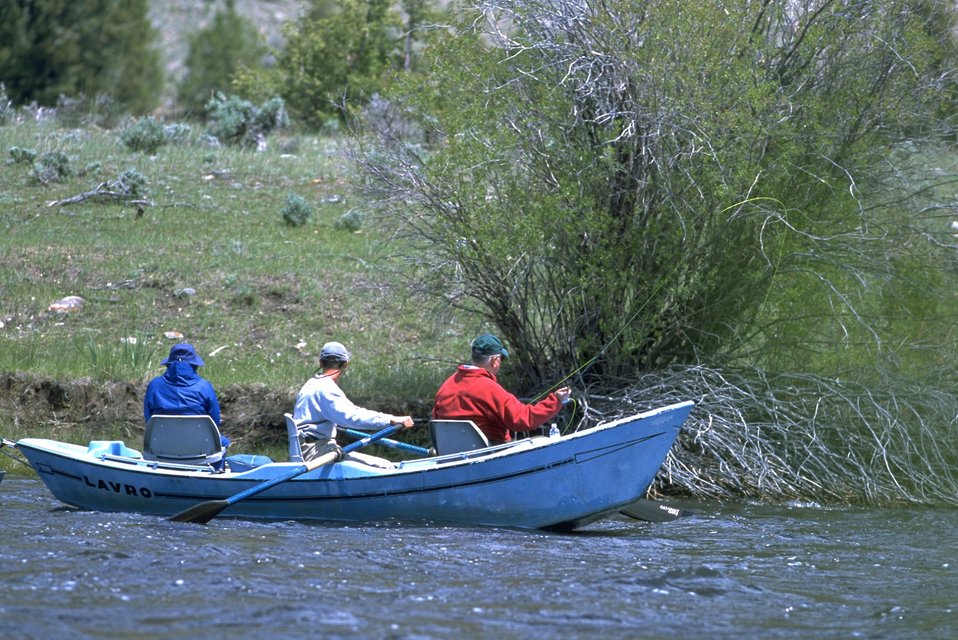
Fishing on the Big Hole River